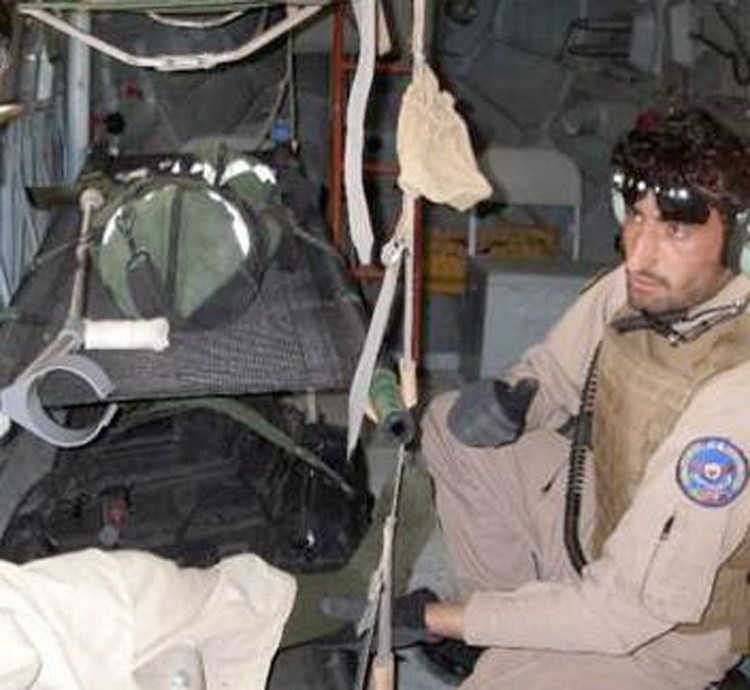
KAW medevac milestone

Fazal, an Afghan flight medic, completes the neurologic and circulatory assessment of his patient during a medical evacuation flight April 11, 2011, from Camp Bastion to Kandahar, Afghanistan. The evacuation was the first dedicated Mi-17 medical evacuation mission flown from Kandahar Air Wing.